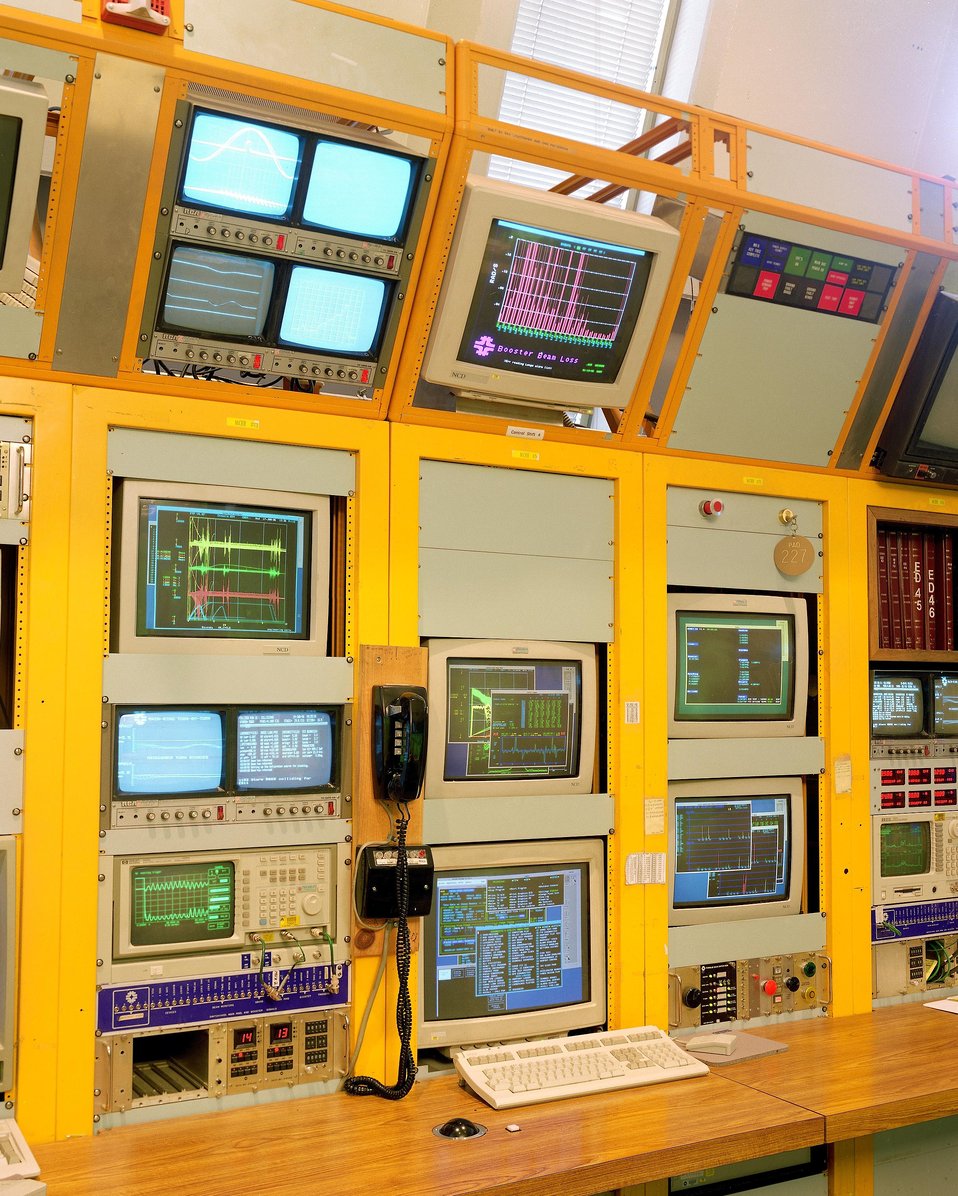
MAIN CONTROL ROOM CONSOLE USED TO MONITOR AND CONTROL THE ACCELERATOR COMPLEX AT FERMILAB.

FERMI NATIONAL ACCELERATOR LABORATORY ADVANCES THE UNDERSTANDING OF THE FUNDAMENTAL NATURE OF MATTER AND ENERGY BY PROVIDING LEADERSHIP AND RESOURCES FOR QUALIFIED RESEARCHERS TO CONDUCT BASIC RESEARCH AT THE FRONTIERS OF HIGH ENERGY PHYSICS AND RELATED DISCIPLINES.